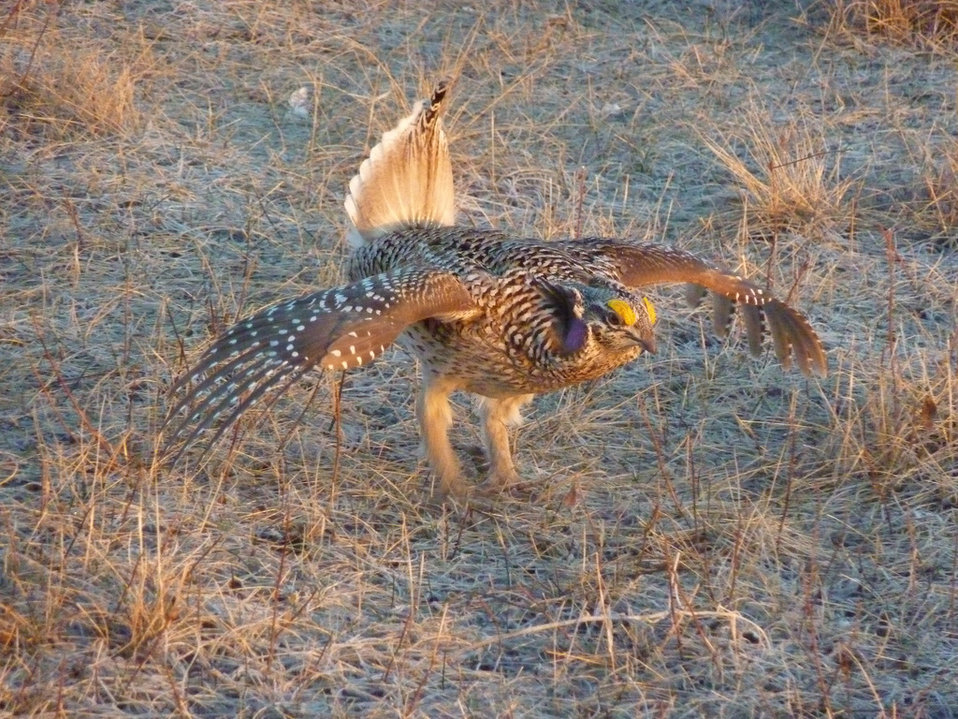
male sharp-tailed grouse dancing

Groups of male sharp-tailed grouse choose a gathering place, called a lek, where they dance, strut and display their plumage to attract females.
Upper Souris National Wildlife Refuge, ND